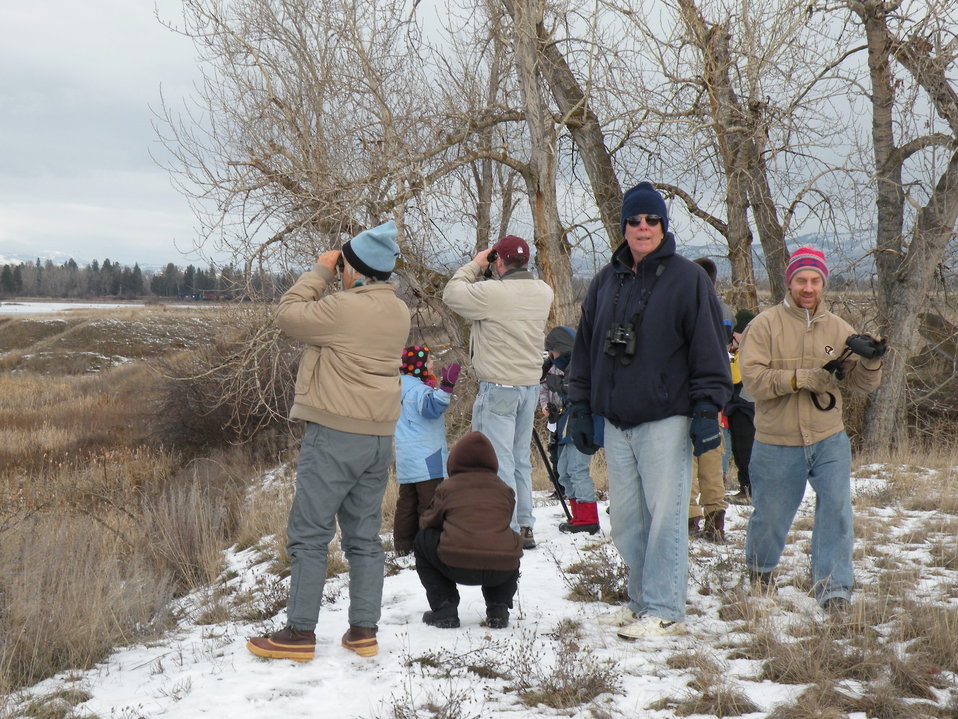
Christmas Bird Count at Lee Metcalf National Wildlife Refuge

Christmas Bird Count for Kids (CBC4Kids), created by sonomabirding.com is a way to connect kids with nature and to learn how to identify and count birds. This is the first year Lee Metcalf National Wildlife Refuge has participated in the fun! Depicted here is a group along the Kenai Nature Trail counting birds at Lee Metcalf National Wildlife Refuge in Montana.